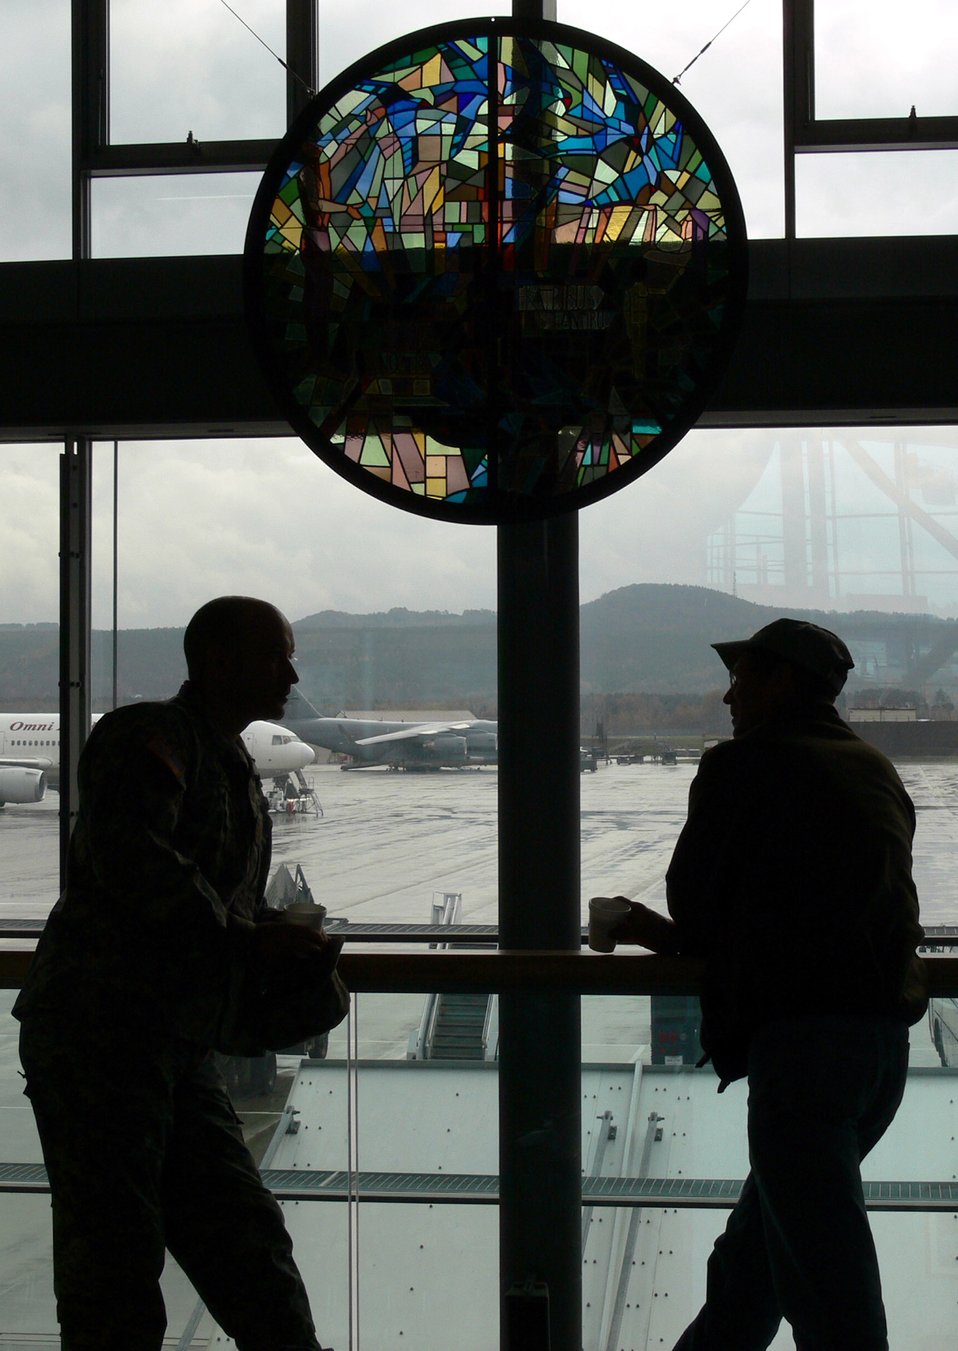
Historic window placed in PAX terminal

RAMSTEIN AIR BASE, Germany (AFPN) -- Two Airmen talk in front of a historic stained glass window at the Ramstein passenger terminal. The window was moved from Rhein-Main Air Base's chapel due to the base closing.